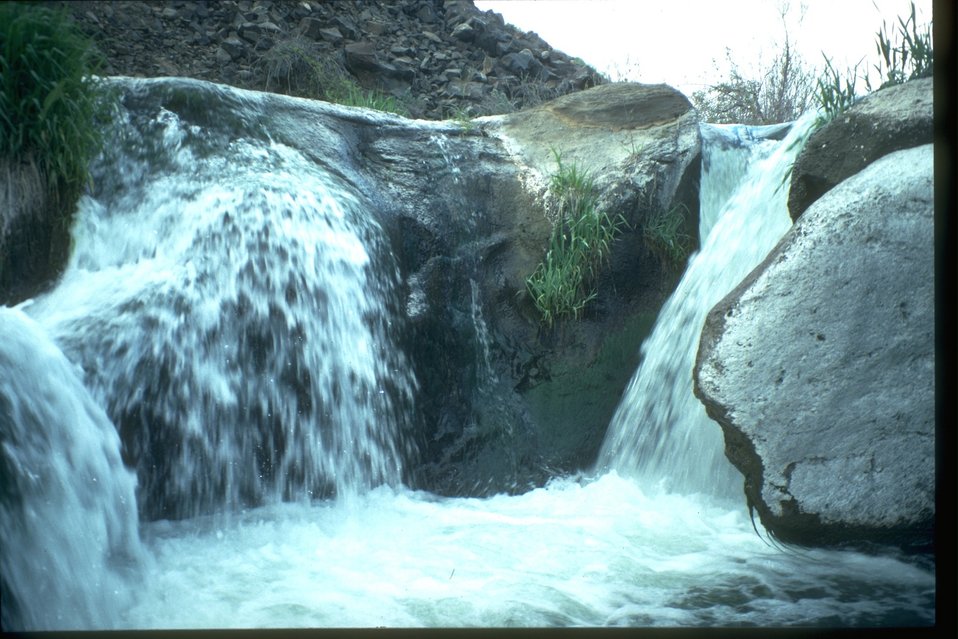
Douglas Creek waterfall in Grant County, WA.